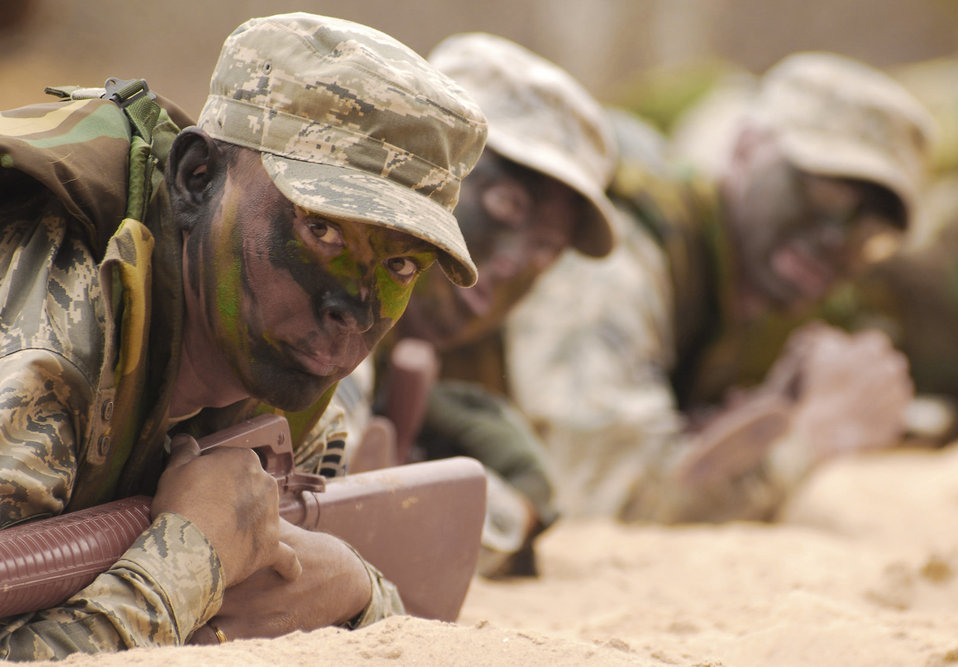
Getting ready to deploy

Crawling into the sand, Airmen at Vandenberg Air Force Base, Calif., simulate an enemy attack during a base exercise June 24. The exercise's overall objective is to provide pre-deployment training prior to a deployment tasking.